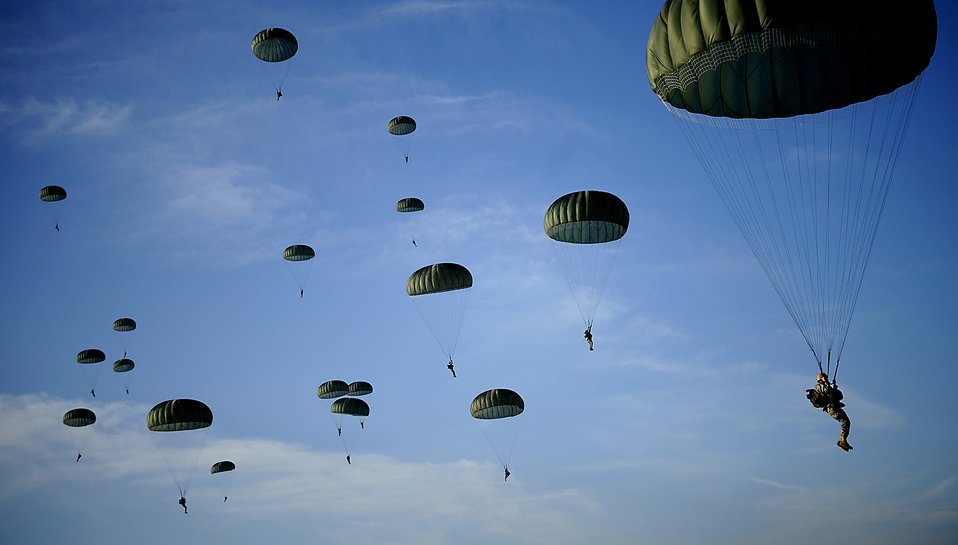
Operation Toy Drop

Army Soldiers from the 82nd Airborne Division from Fort Bragg, N.C., descend under parachute canopies to earn foreign jump wings Dec. 6 during Operation Toy Drop at Fort Bragg, N.C. Operation Toy Drop is an annual Airborne jump at Fort Bragg in its 11th year hosted by the Army Civil Affairs and Psychological Operations Command (Airborne), and supported by Fort Bragg's XVIII Airborne Corps and the Air Force Reserve Comman's 440th Airlift Wing at Pope Air Force Base that gives Soldiers and Airmen the opportunity to help local families in need over the holidays while boosting morale and incorporating valuable training. More than 3,000 Soldiers donated a toy for a lottery ticket and the chance to jump under a foreign jumpmaster, earning them their foreign jump wings. This year, German and Irish jumpmasters will be issuing the commands from C-130 Hercules aircraft during the operation.